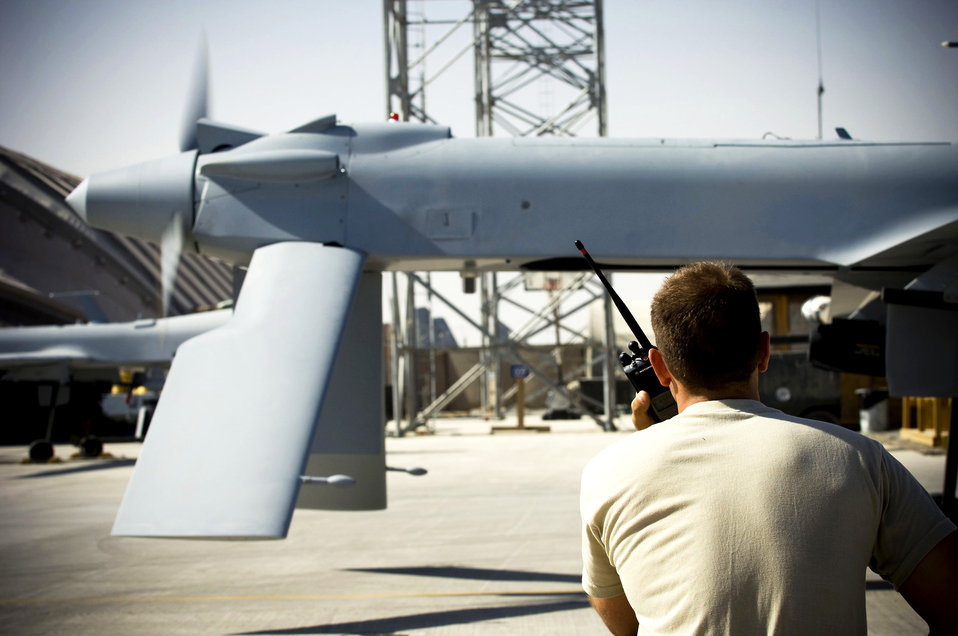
Predators on patrol in Afghanistan

Airman 1st Class Justin Cole monitors the engine and propeller of an MQ-1 Predator as it starts up Oct. 26 at a base in southern Afghanistan. With the pilot and sensor operator inside the ground control station, they rely heavily on communication via radio with crew chiefs to have a successful launch. Airman Cole is a 62nd Expeditionary Reconnaissance Squadron crew chief deployed from Creech Air Force Base, Nev. He hails from Orange Park, Fla.